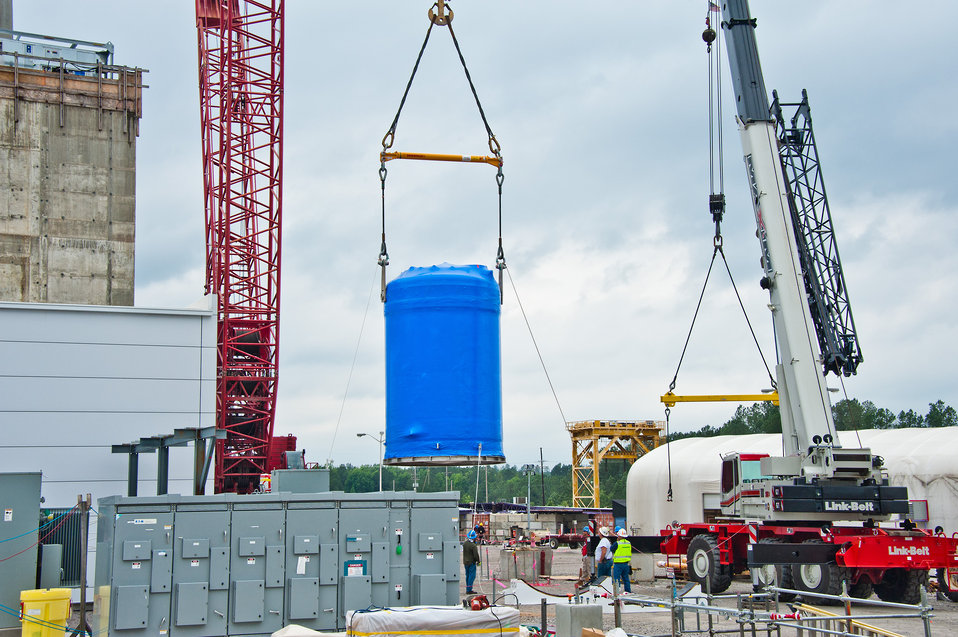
SRS Processing Tanks

A major construction milestone is met with the successful installation of six of 10 planned large processing tanks at the Savannah River Site’s (SRS) Salt Waste Processing Facility (SWPF). Installation of these critical facility components advances SWPF construction, allowing for piping and facility floors to be completed and the facility roof put into place. Slated for operation in late 2015, SWPF is designed to treat 33 million gallons of salt waste currently stored in underground tanks at SRS.